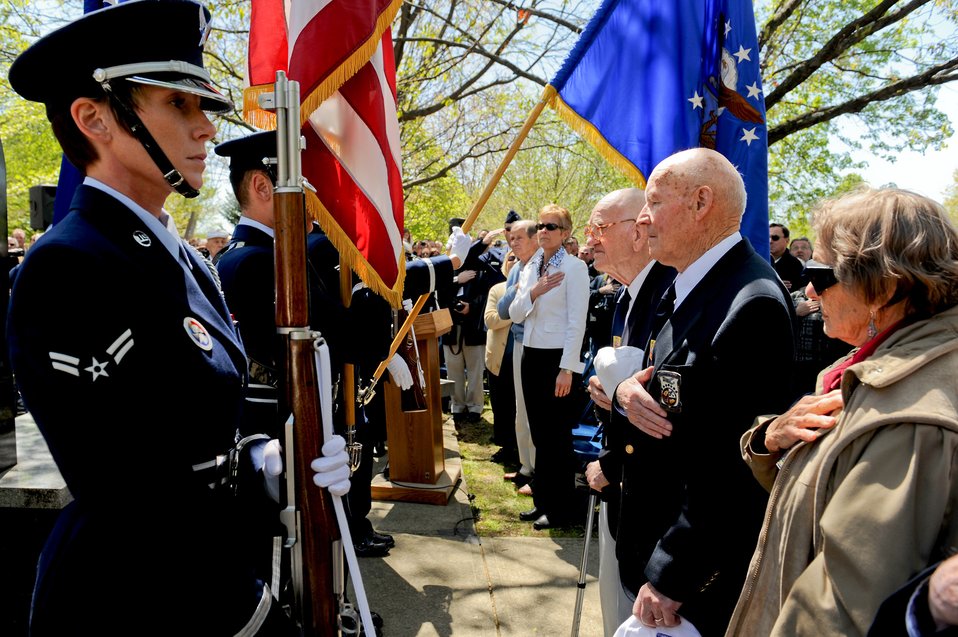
Doolittle Raiders Memorial Service

Doolittle Raiders Major Thomas Griffin (third from right) and Master Sgt. David Thatcher (second from right) and his wife Dawn (right) hold their hands over their hearts as the colors are rendered by airmen from the 88th Force Support Squadron's honor guard team to begin the memorial service held in honor of the Doolittle Tokyo Raiders during their 68th reunion held at the National Museum of the United States Air Force, Wright-Patterson Air Force Base, Ohio, April 18th, 2010. The Doolittle Raiders' 68th reunion commemorates the anniversary of the Doolittle Tokyo Raid on April 18th, 1942, when U.S. Army Air Forces Lt. Col. Jimmy Doolittle's squad of 16 B-25s bombed targets in response to the Japanese attack on Pearl Harbor.